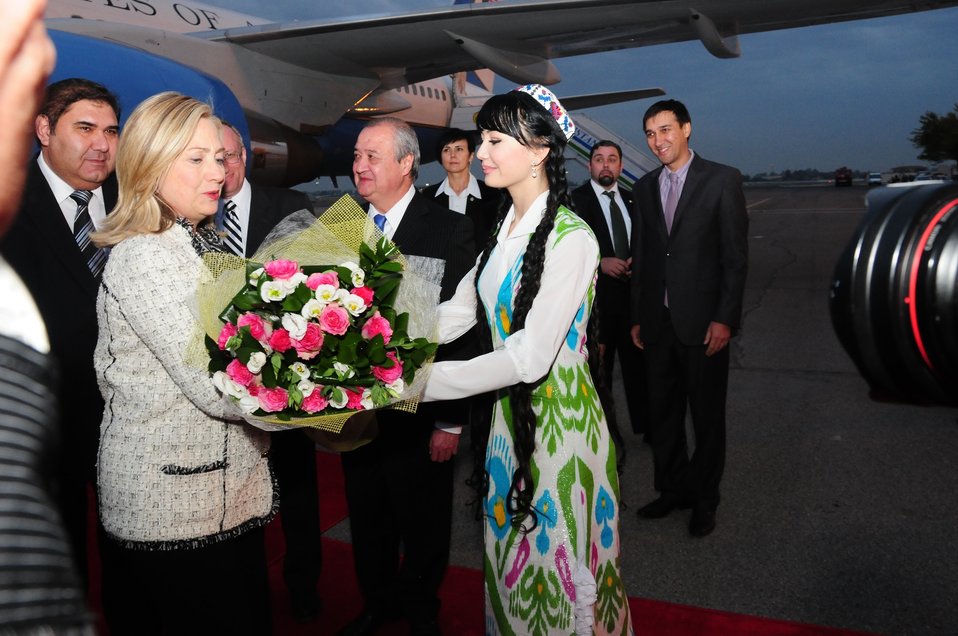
Secretary Clinton Receives Flowers From an Uzbek Woman

U.S. Secretary of State Hillary Rodham Clinton receives flowers from an Uzbek woman upon her arrival to Tashkent, Uzbekistan, on October 22, 2011. Individuals in the background, from left to right, include: Uzbek Foreign Minister Elyor Ganiev, U.S. Ambassador to Uzbekistan George Krol, and Uzbek Deputy Foreign Minister Abdulaziz Kamilov.